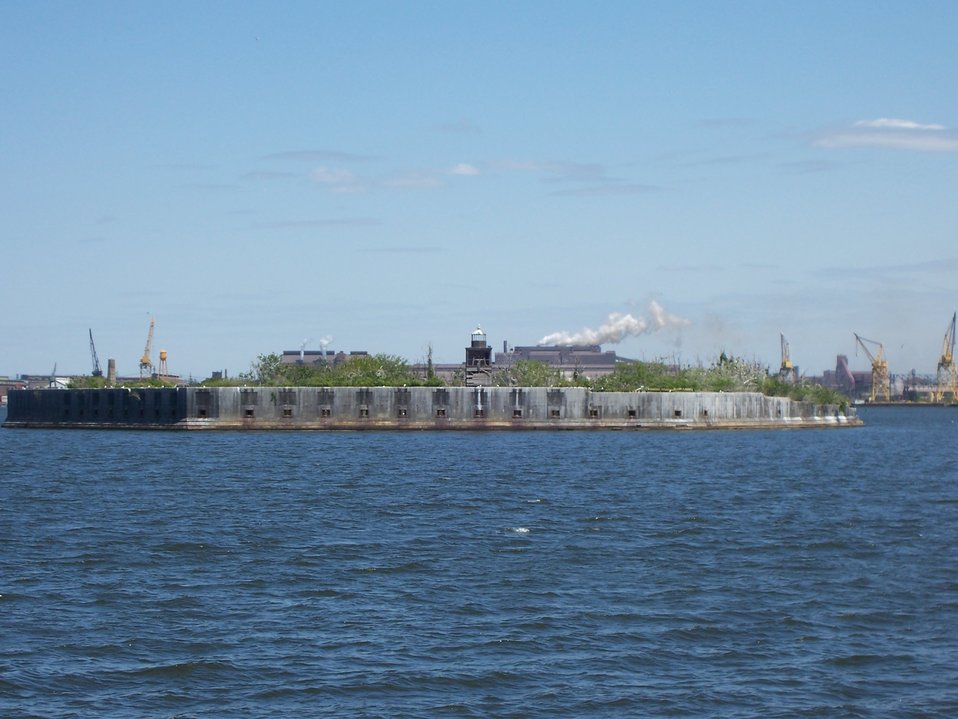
Fort Carroll Lighthouse in Baltimore Harbor.